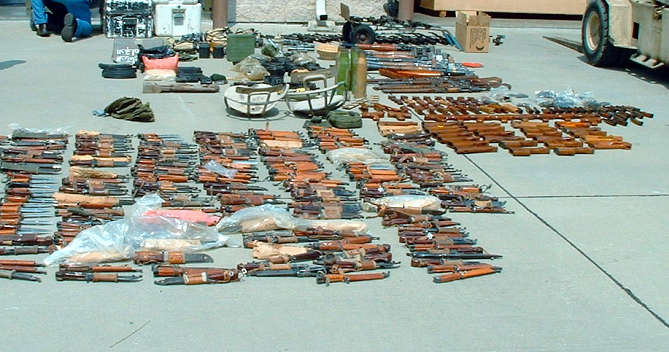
Suspected contraband

EGLIN AIR FORCE BASE, Fla. -- Officials have preferred charges against Maj. Gregory McMillion after an investigation found evidence he allegedly shipped contraband items here from an Operation Iraqi Freedom deployment. The suspected contraband includes knives and bayonets. Major McMillion is assigned to the base's 728th Air Control Squadron.